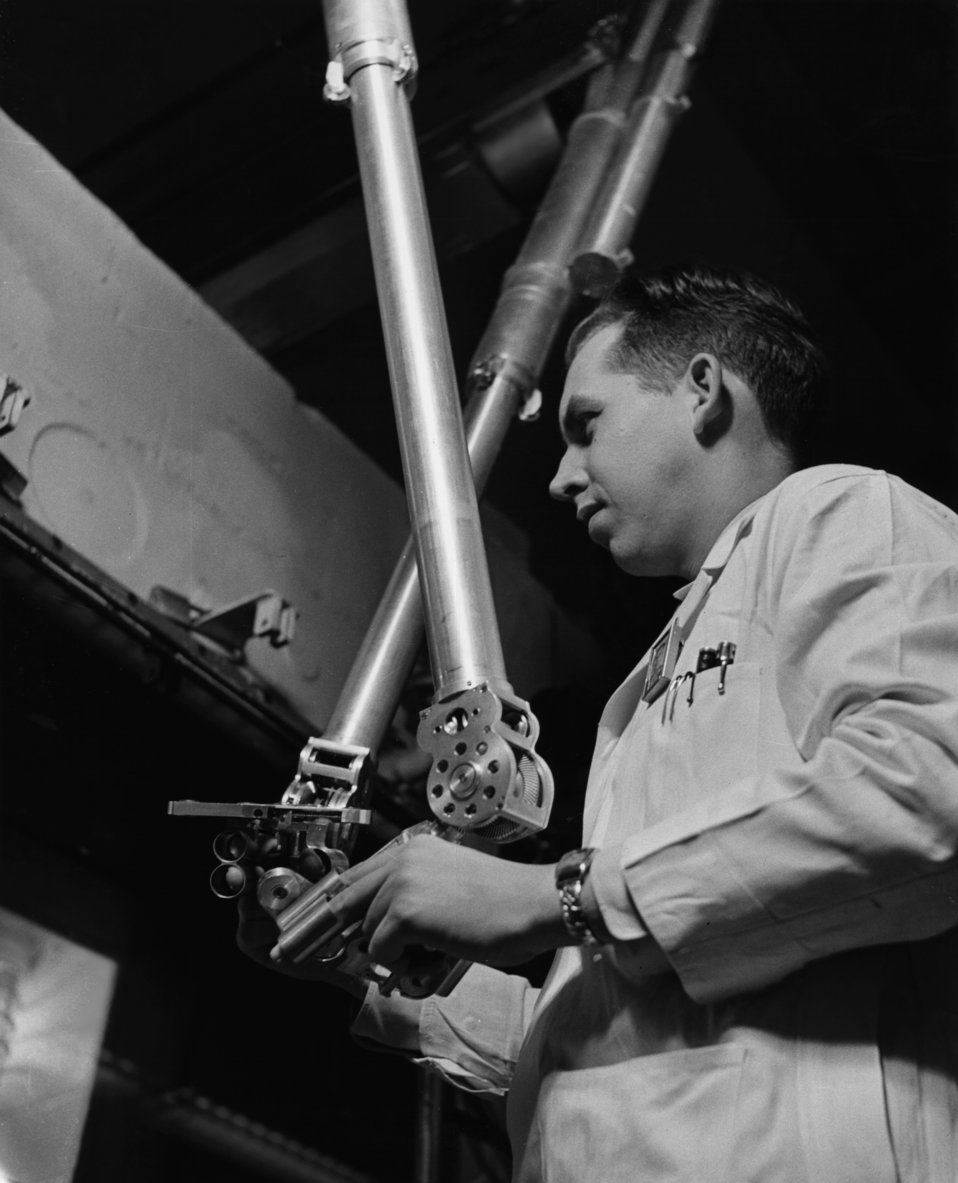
Technician With Manipulators ORNL Reactor

7770-56 Ed Westcott 2-13-1952 Oak Ridge Tennessee